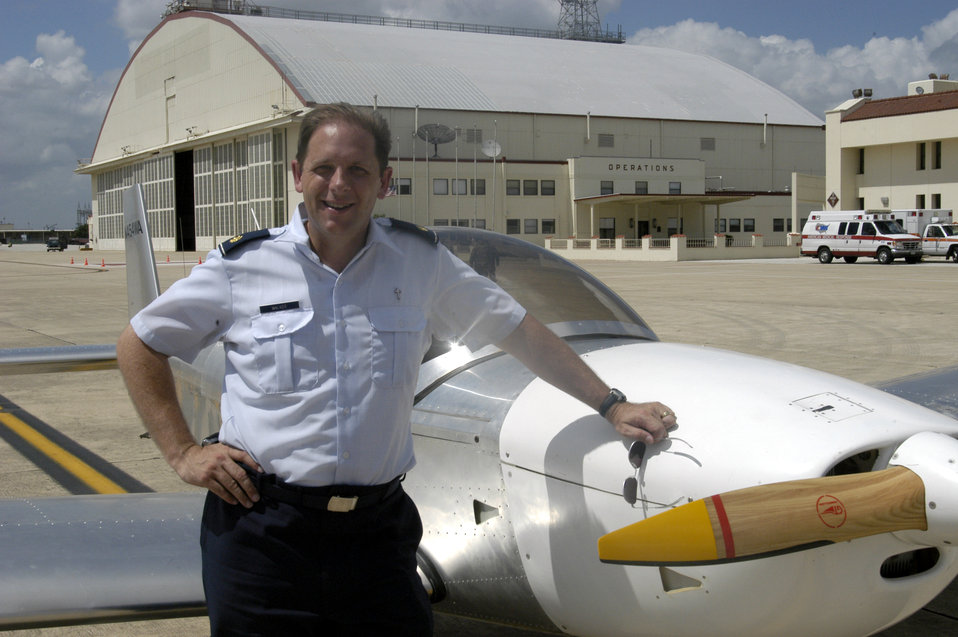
Zodiac man

LACKLAND AIR FORCE BASE, Texas -- Chaplain (Maj.) Weston Walker stands next to his Zenith Zodiac 601 XL on the Kelly Field Annex flightline. Chaplain Walker built the aircraft from a kit in his garage and at a hangar at a local airport.